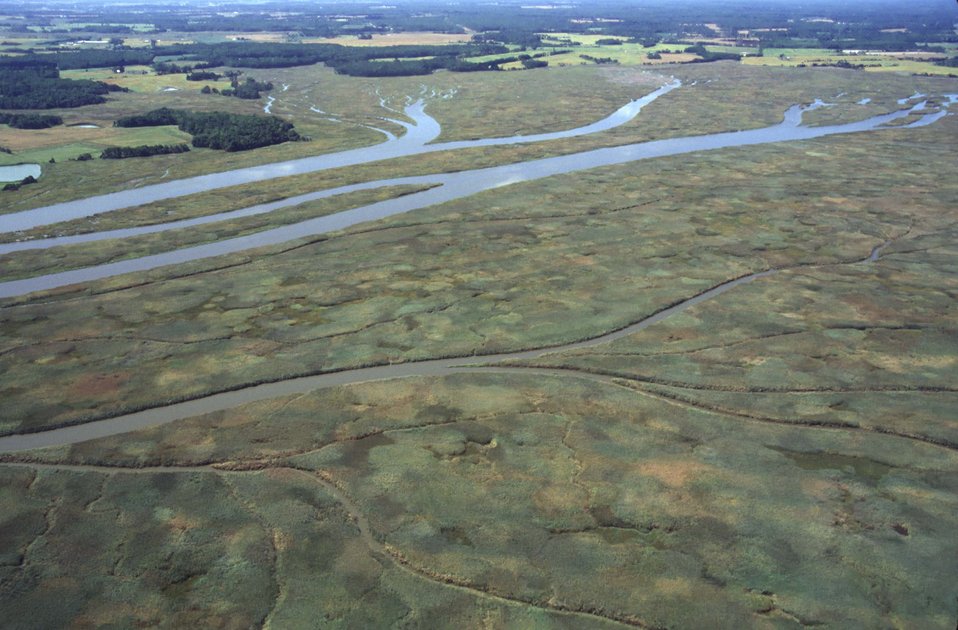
Near Bombay Hook, DE